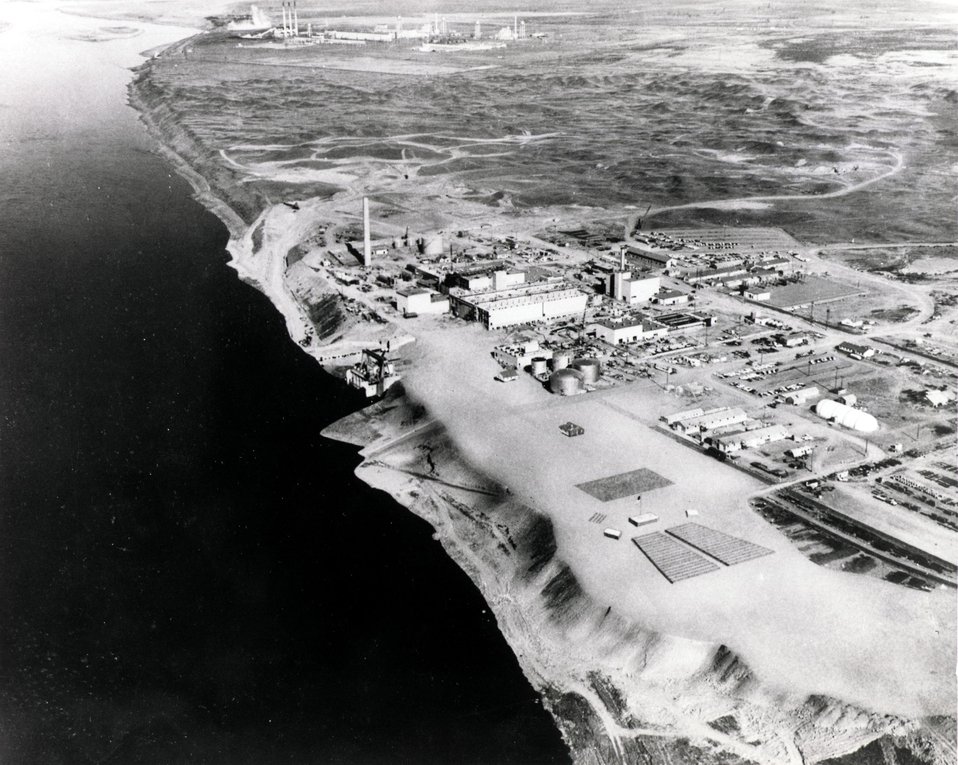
Aerial view of the New Production Reactor area under construction with airbrushed area in foreground with layout of stands indicating proposed dedication area. Circa 1964.